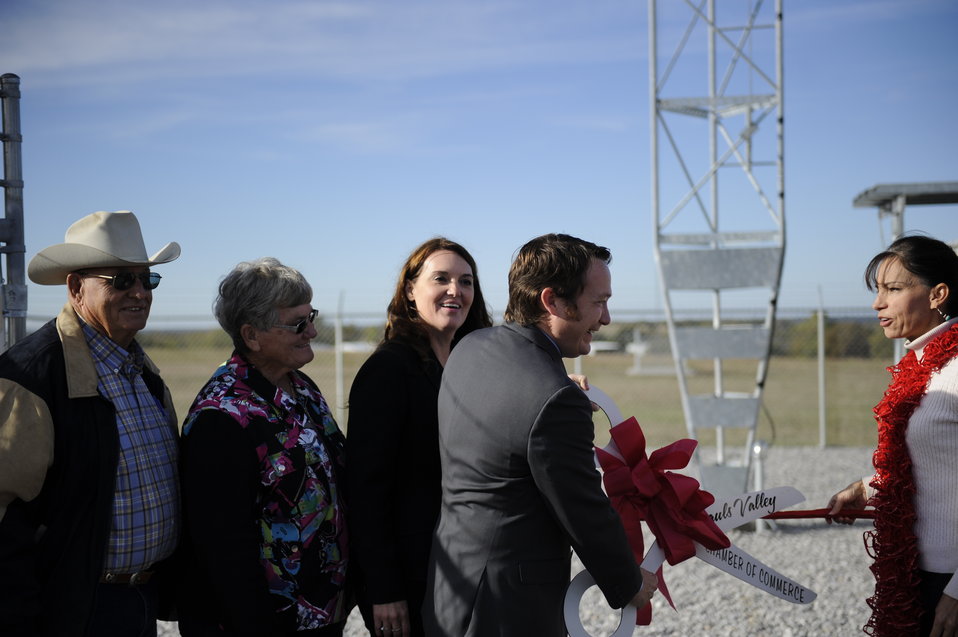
Oklahoma Rural Development State Director Ryan McMullen joins project representatives, elected officials, and community representatives to cut a ribbon officially declaring the completion of the 1st of 30 towers, comprising the new broadband network.